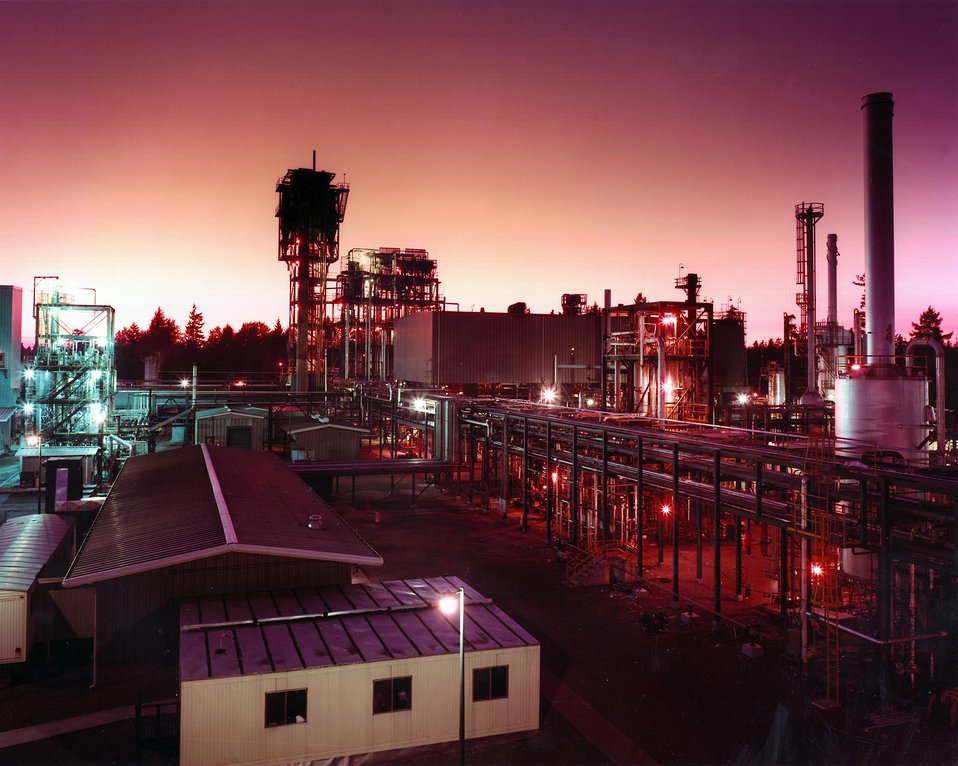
VIEW (R TO L) OF PRE-HEATERS, HYDROGEN AND NITROGEN GENERATION, FILTRATION, AND FRACTIONATION AREAS, AND CONTROL ROOM.